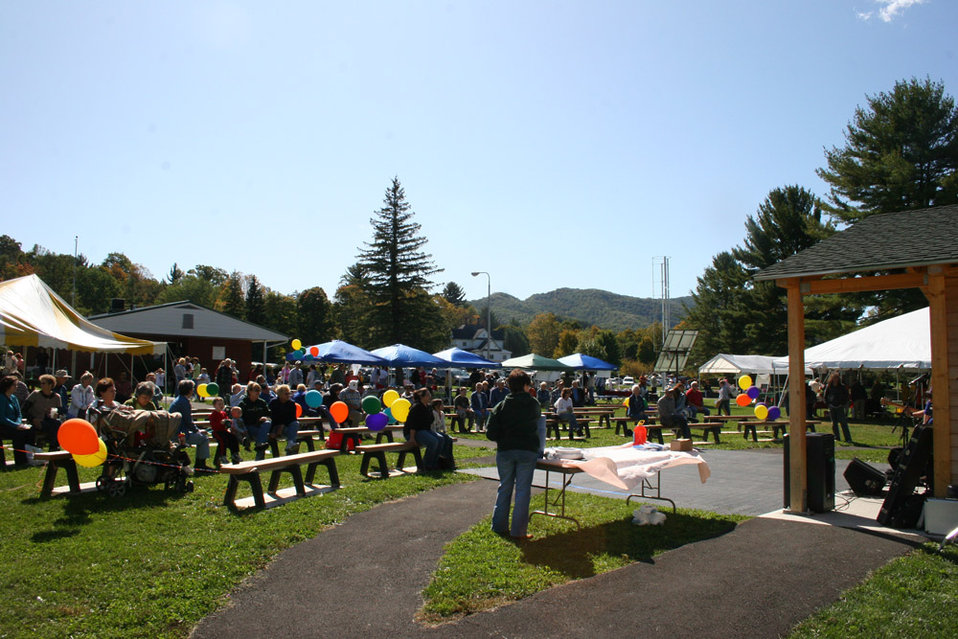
Freshwater Folk Festival

The 5th Annual Freshwater Folk Festival at White Sulphur Springs National Fish Hatchery in West Virginia.Credit: USFWS